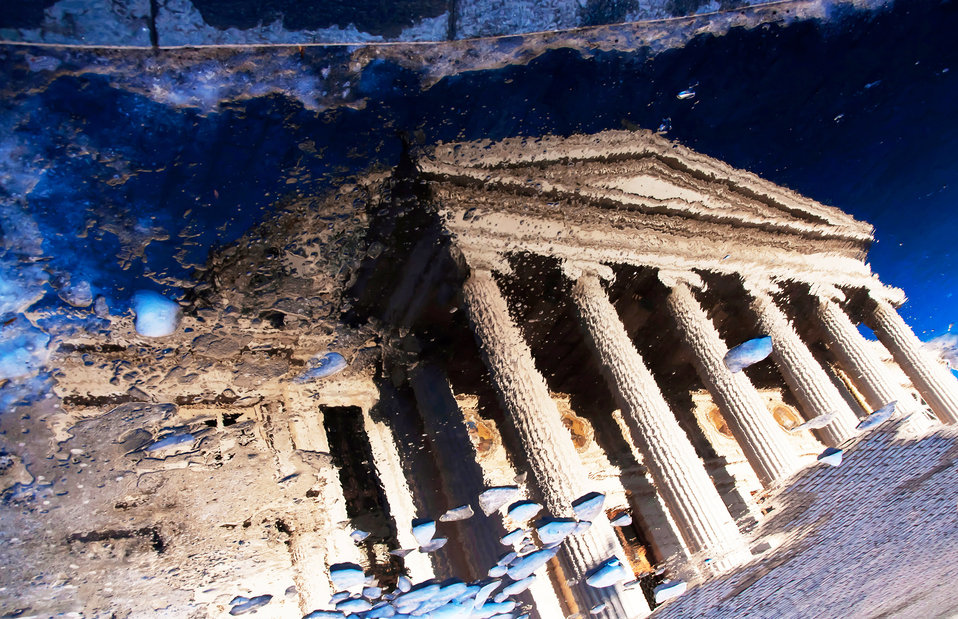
Ateneum

Ateneul roman.